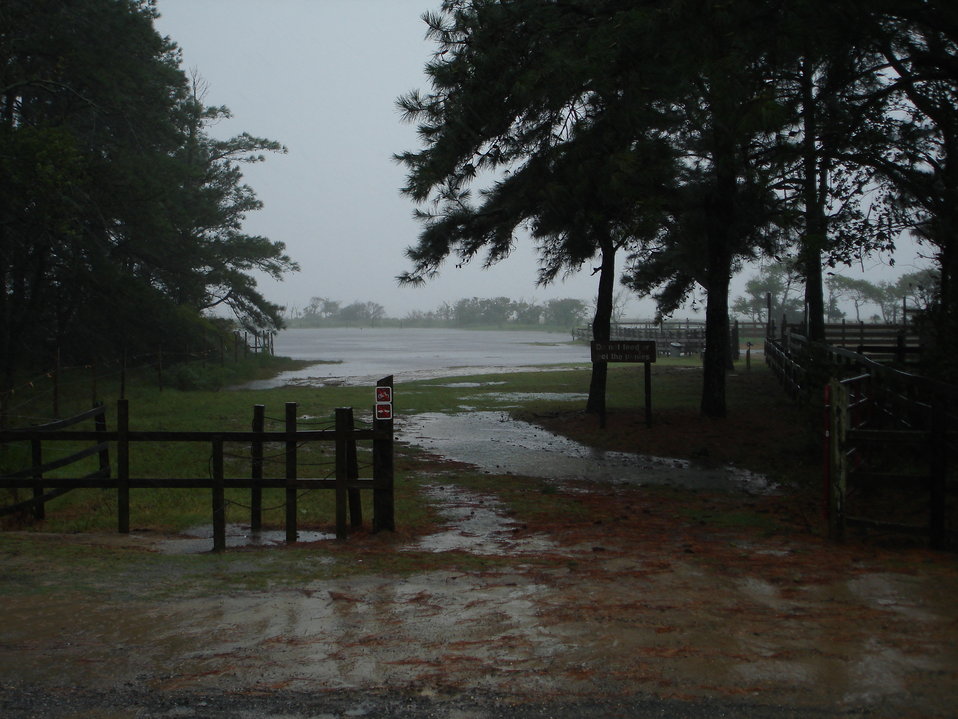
Flooded pony corral area near Beach Road at Chincoteague National Wildlife Refuge in Virginia after Hurricane Irene.